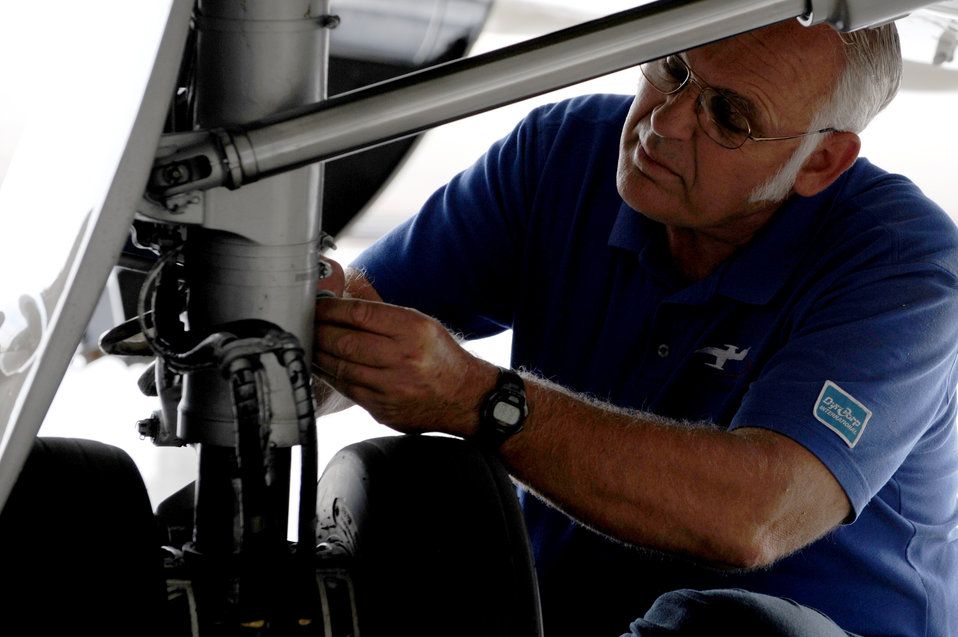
C-21 phase inspection

Dan Arens performs maintenance on a C-21 landing gear during a phase inspection Sept. 15, 2010, at Scott Air Force Base, Ill. The phase inspections are done on aircraft after they reach flying milestones to ensure the aircraft remain in top condition. Mr. Arens is a contractor with DynCorp International.